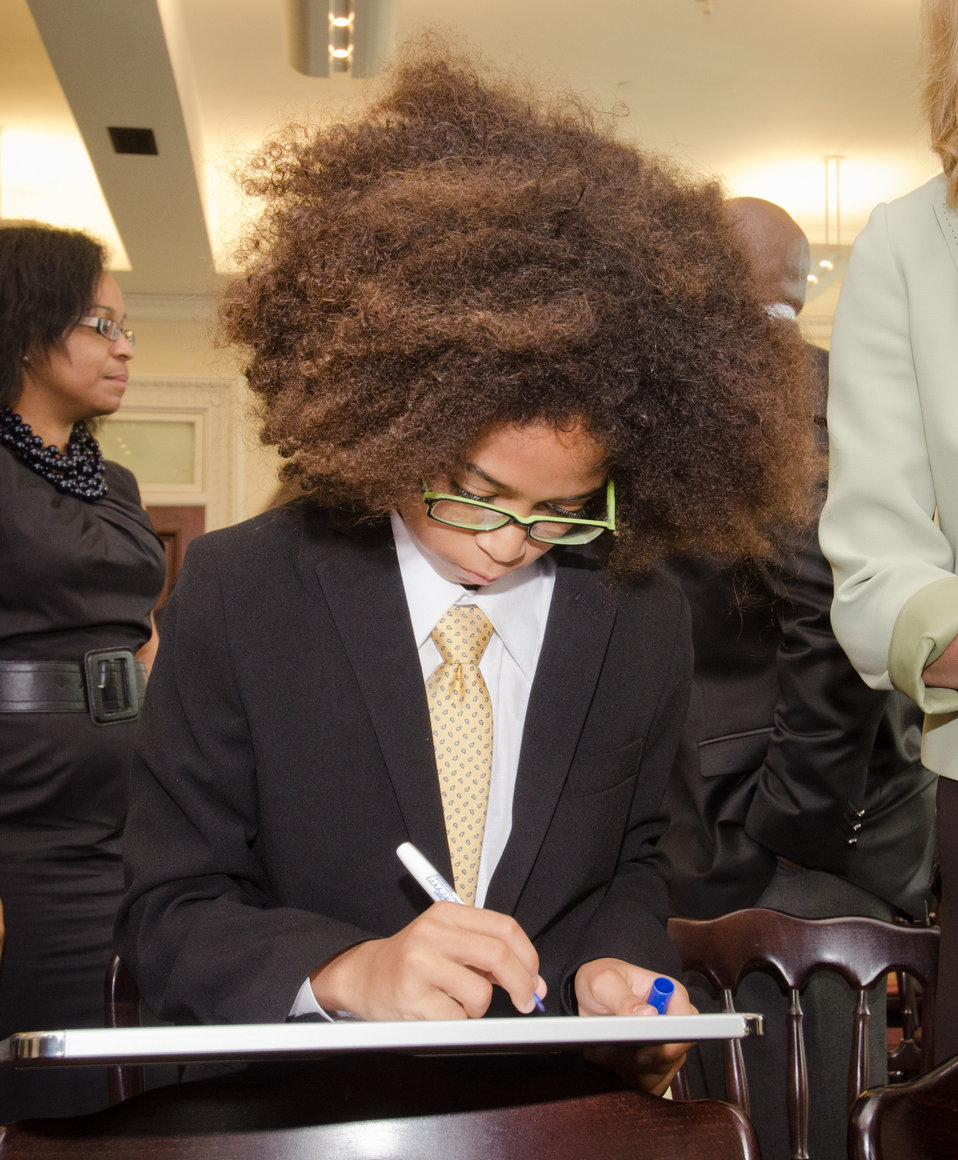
Joshua’s Heart Foundation President Joshua Williams wrote his comment to I care about hunger... and held up the board for photos, during an event recognizing his efforts to reduce hunger and increase food security in the U.S. and internationally at the White House Champions of Change Strengthening Food Security at Home and Abroad Event held at the White House on Thursday, September 6, 2012, in Washington, D.C.